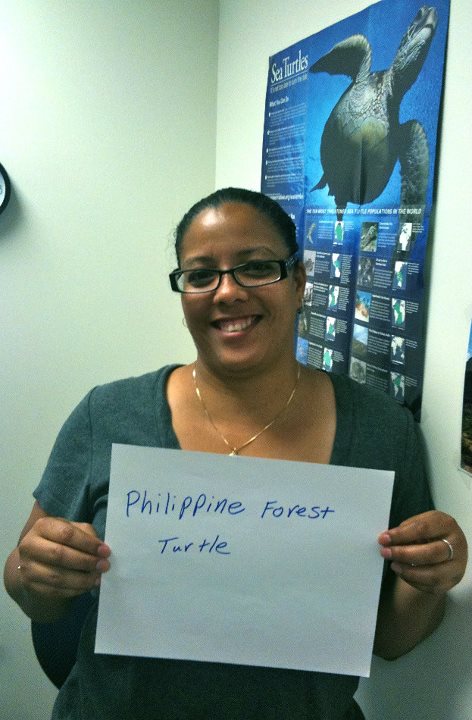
Brenda Tapia, 'Philippine Forest Turtle,'

International Affairs participates in FFI's In Our Hands campaign